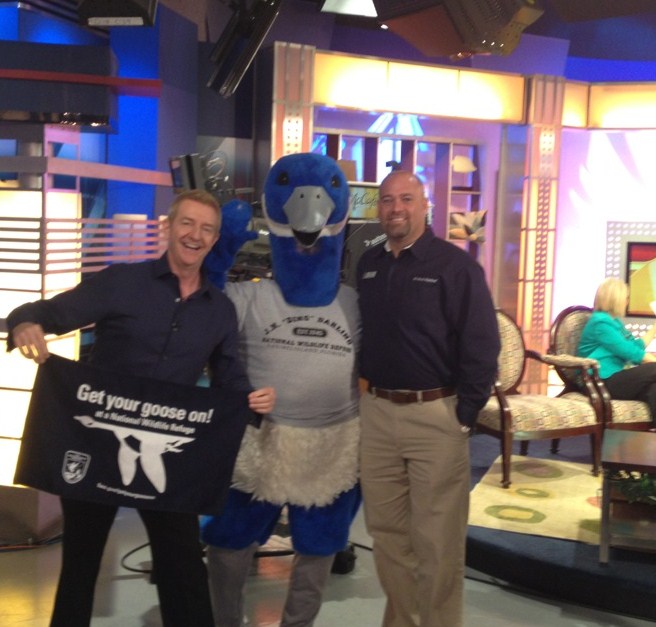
Blue Goose, Fox 4 Morning Blend, Wild Bill

Taken during the Fox 4 with Morning Blend show with Wildl Bill.